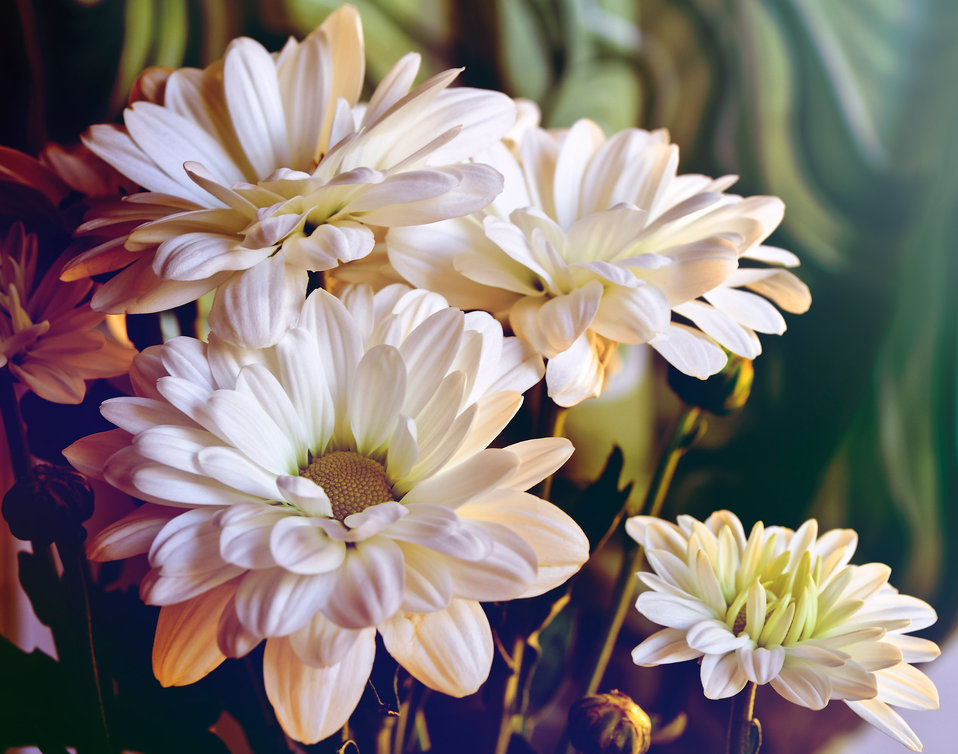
Bouquet of flowers

A beautiful bouquet of white chrysanthemums.